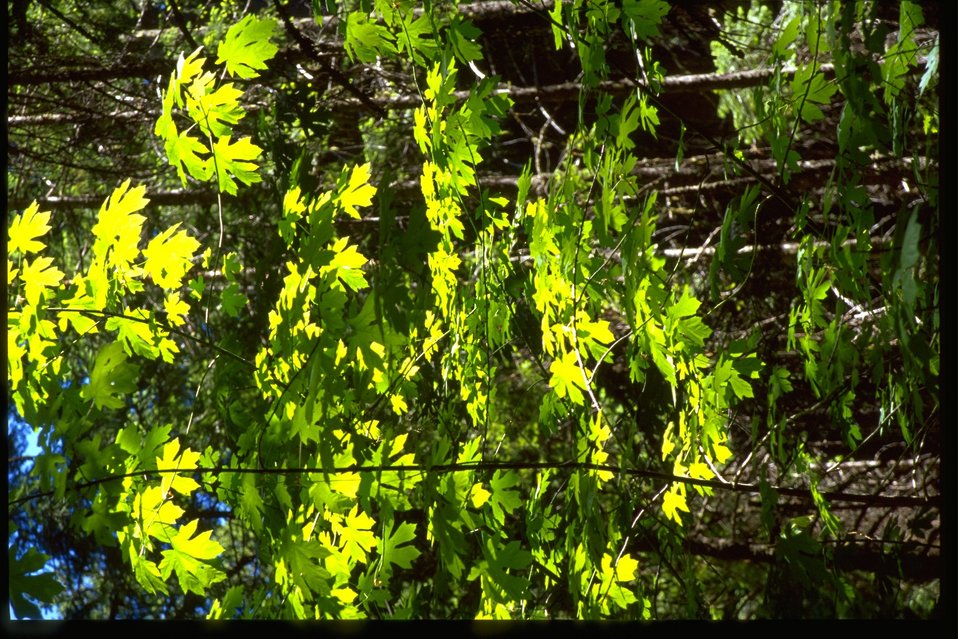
Sunlit vine Maple.